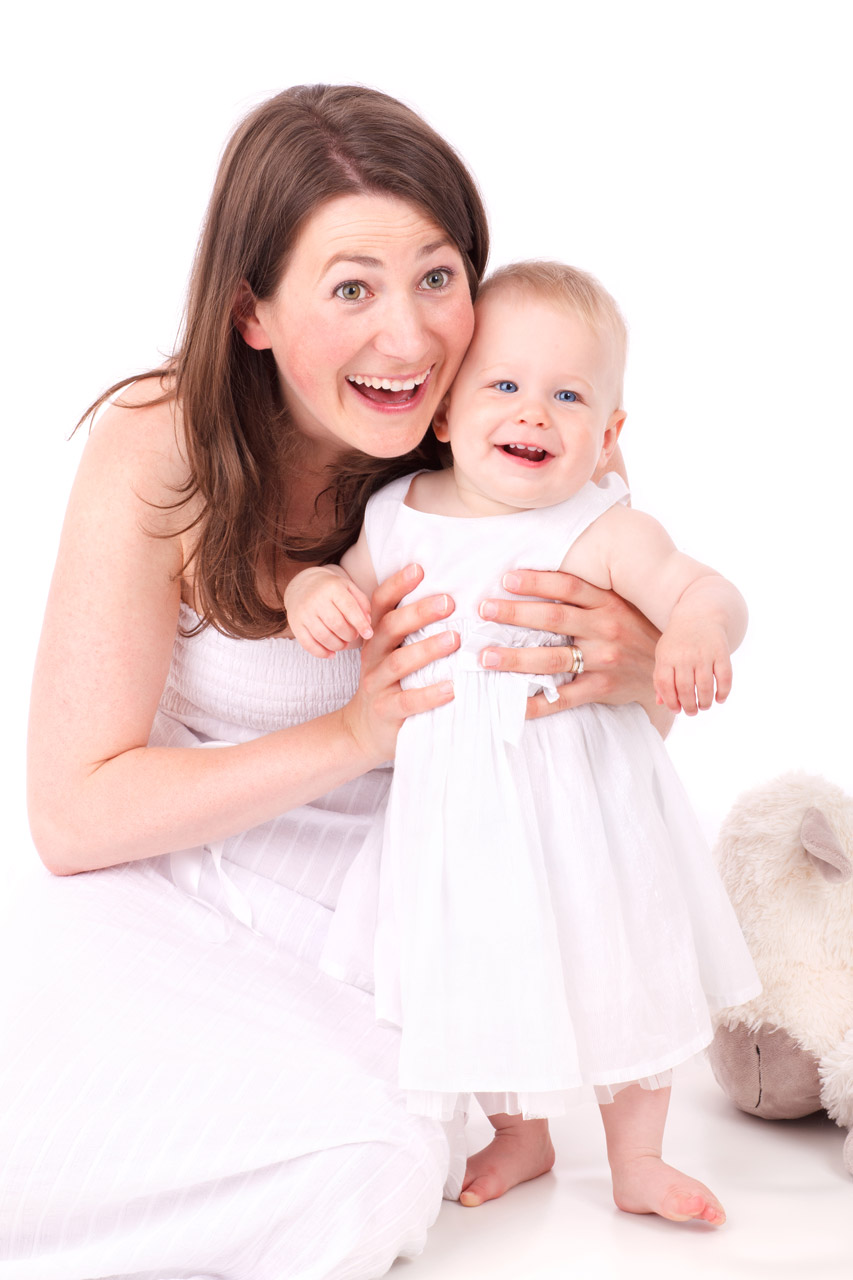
Mother and baby smiling

Mother smiling with her daughter at something isolated on white background.